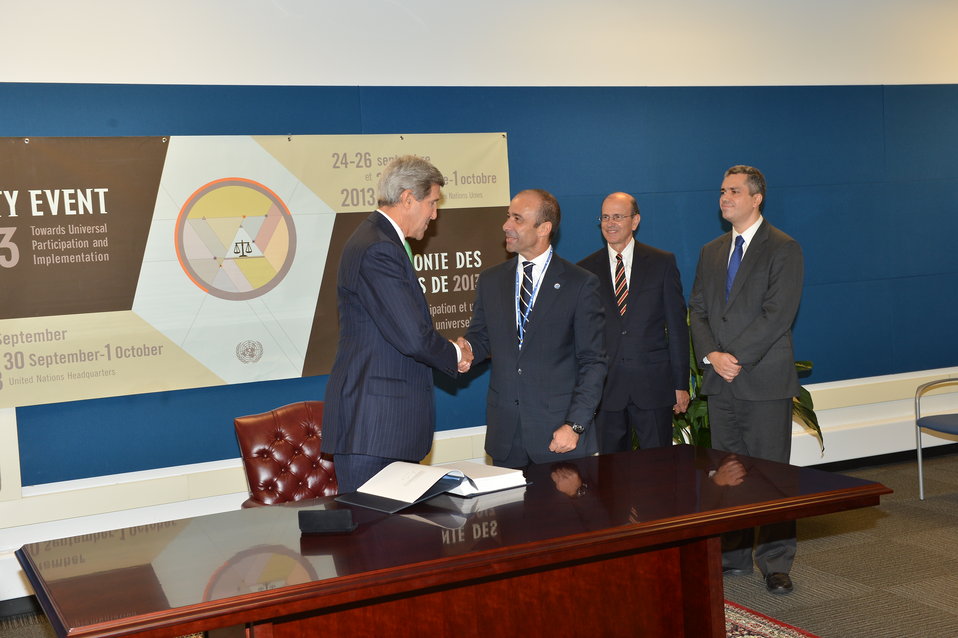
Secretary Kerry Participates in the Arms Trade Treaty Signing Ceremony

U.S. Secretary of State John Kerry participates in the Arms Trade Treaty signing ceremony at the United Nations in New York City on September 25, 2013.